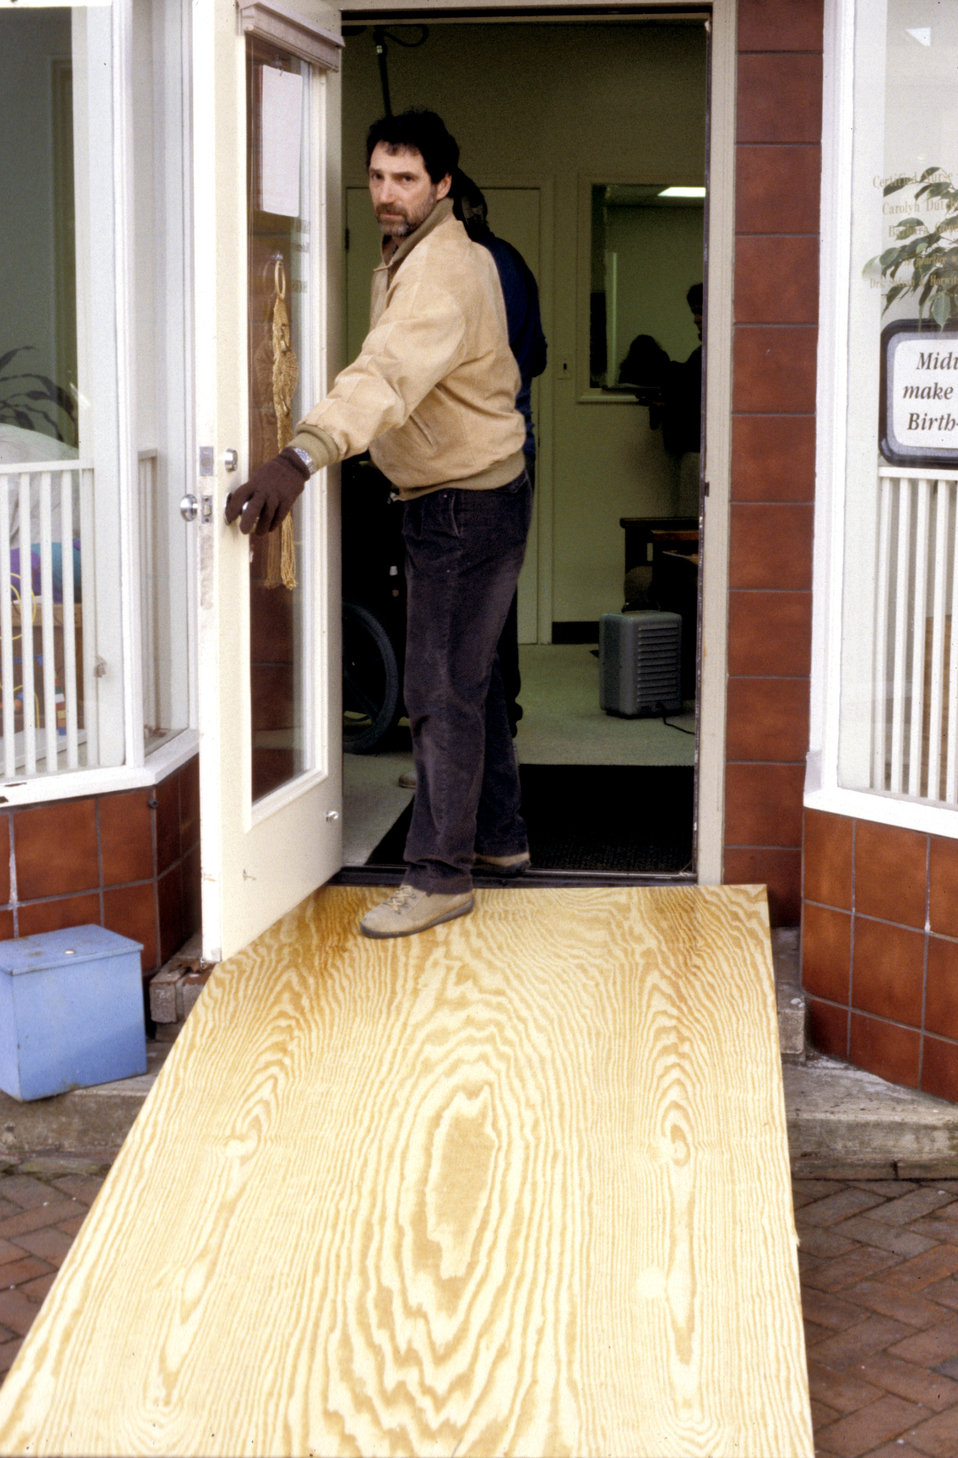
In this 1993 image, the front of a women's clinic revealed a front door that was accessed via a two-step stoop, which made accessibility an issue for individuals having problems with mobility, therefore, prompting the installation of a temporary plywood ramp depicted here. Though the temporary ramp made access easier for the mobility-challenged, it was constructed in such a way as to make it a dangerous, though short-term solution (see PHIL 9023 - 9026). PHIL images 9027 - 9029 depicted a long-term, permanent solution using a brick, concrete, and metal ramp. It was not the perfect solution, for it lacked adequate maneuvering room near the clinic doorway. It also clearly appeared as an add-on, or after-the-fact solution that protruded into the wide sidewalk, while attempting to blend in with the existing buildings by using brick, colored concrete, and wrought iron rails. Stairs had also been provided.